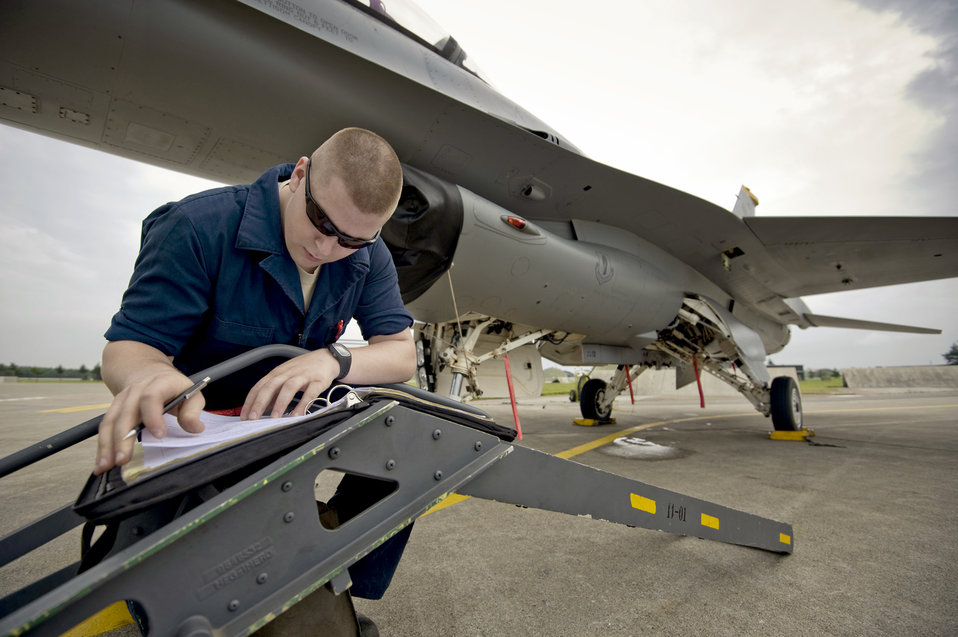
Falcon maintenance

Airman 1st Class Patric Shaw completes maintenance logs on an F-16 Fighting Falcon following a training sortie Aug. 2, 2010, at Misawa Air Base, Japan. Airman Shaw is with the 13th Aircraft Maintenance Unit.